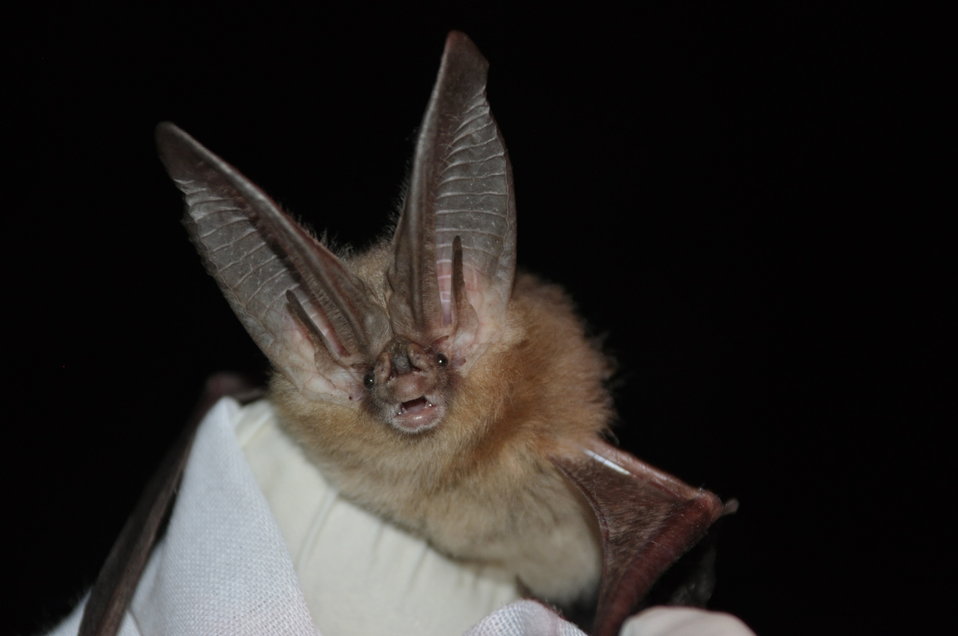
Townsend's big-eared bat (Corynorhinus townsendii)